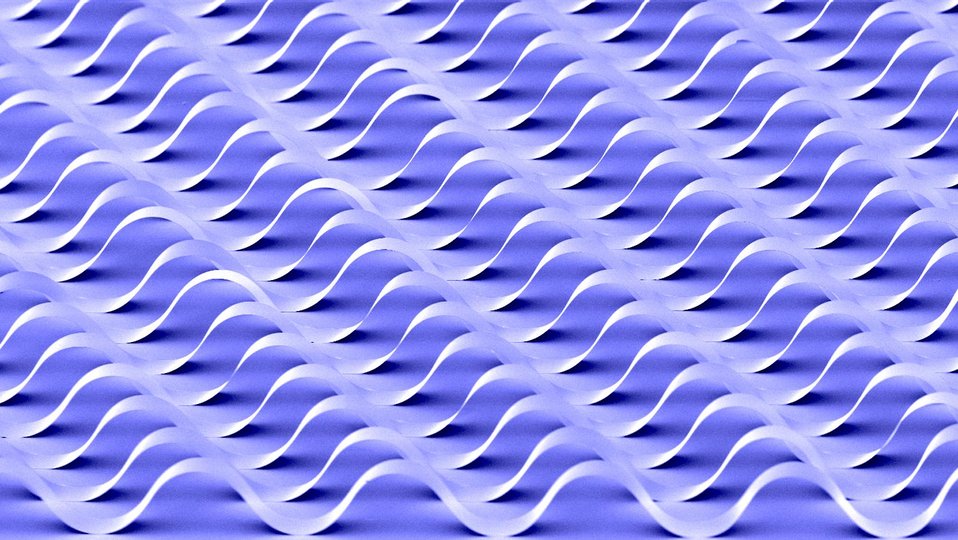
Semiconductor ribbons with buckled profiles on polydimethysiloxane surfaces that are functionalized for surface chemical bonding exhibit mechanical stretchability.
Flexible electronic structures with the potential bend, expand and manipulate electronic devices are being developed by researchers at Argonne National Laboratory and the University of Illinois at Urbana-Champaign. The flexible structure could find useful applications as sensors and as electronic devices that can be integrated into artificial muscles or biological tissues. The objective to generate a concept along with subsequent technology that would allow for electronic wires and circuits to stretch like rubbers and accordions leading to sensor-embedded covers for aircraft and robots, and prosthetic skin for human. Presently they are developing stretchable electronic stretchable electronic sensors for smart surgical gloves and hemispherical electronic eye images.